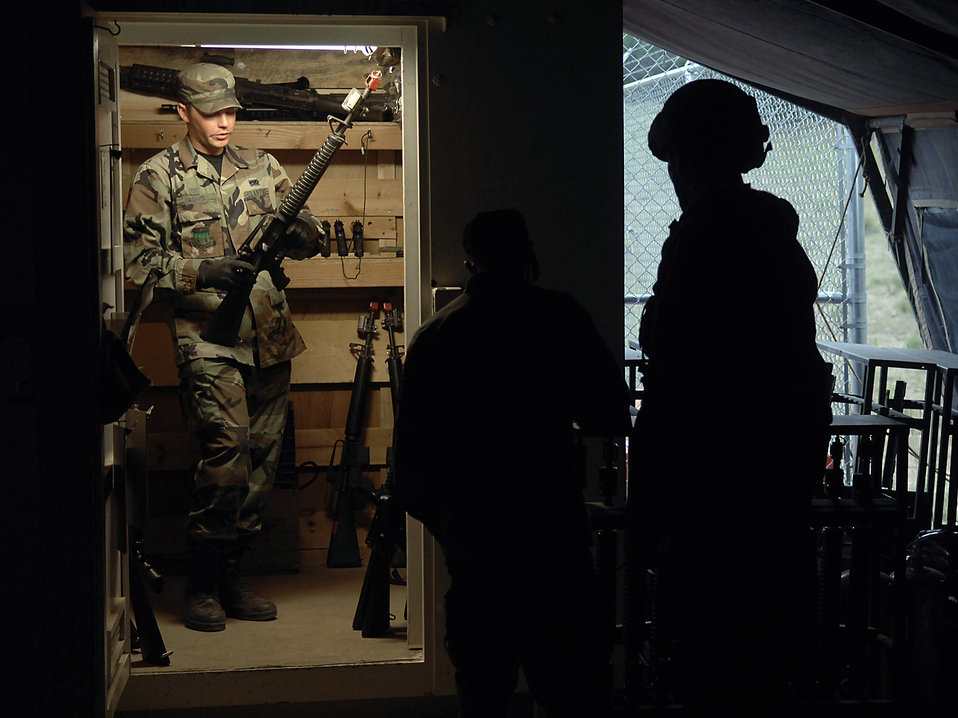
Global Engagement

Cadet Ryan Weaver prepares to hand out M-16 rifles to other cadets July 13 during Global Engagement, a summer course at the U.S. Air Force Academy in Colorado Springs, Colo. Global Engagement teaches cadets the expeditionary Air Force concept of deploying, establishing a bare-base operation, executing their mission, defending their base and re-deploying home.